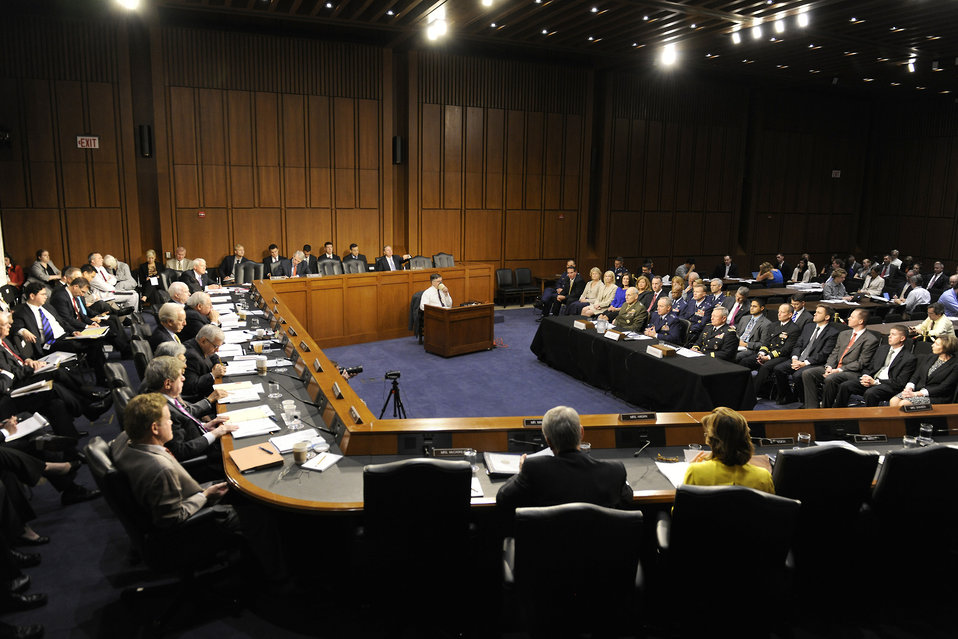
CSAF nominee

Gen. Mark A. Welsh III, the commander of U.S. Air Forces in Europe, testifies before the Senate Armed Services Committee in Washington, D.C., on July 19, 2012, as part of the confirmation process to serve as the 20th Air Force Chief of Staff. If confirmed, Welsh will replace Gen. Norton Schwartz, who retires Aug. 10. Additional witnesses before the committee were Lt. Gen. John F. Kelly, U.S. Marine Corps, who is nominated to the rank of general and to take command of U.S. Southern Command, and Lt. Gen. Frank Grass, Army National Guard, also nominated for the rank of general and for appointment as the Chief of the National Guard Bureau.